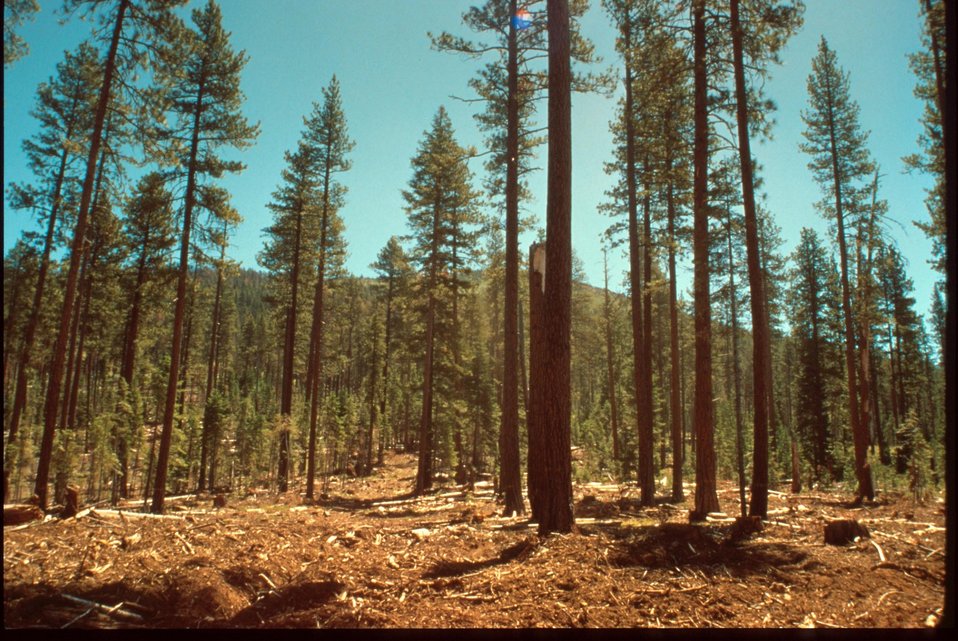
Fire treated Idaho Falls Upper Snake River District